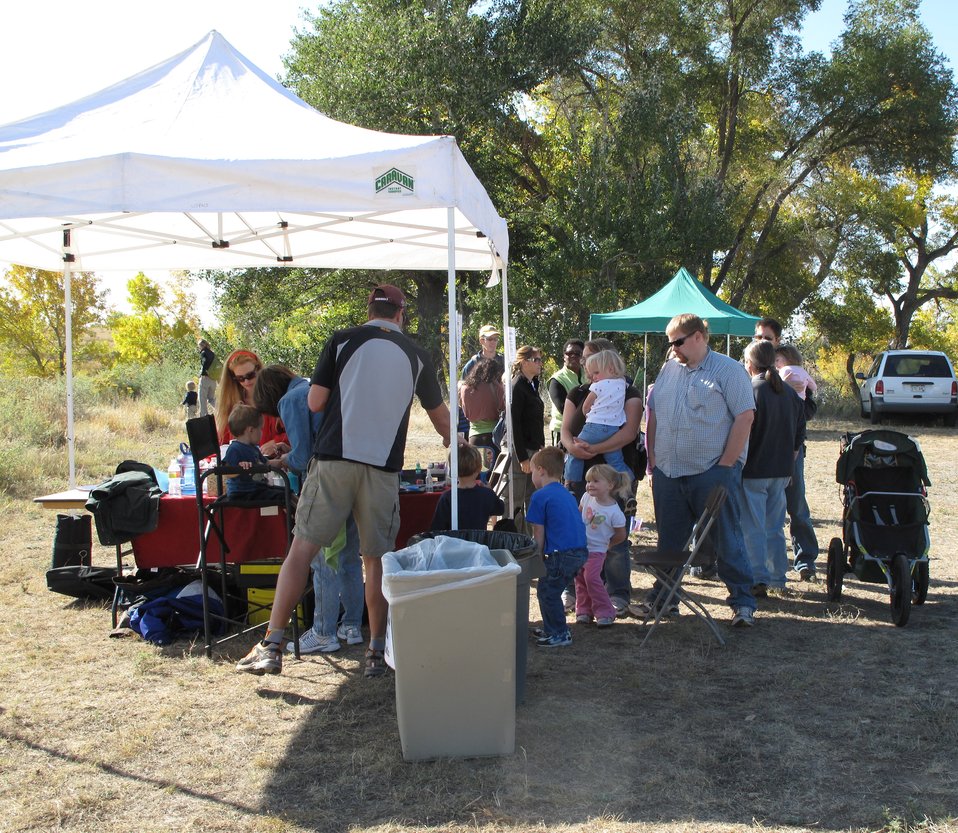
Refuge Round-up 2010

Face painting.